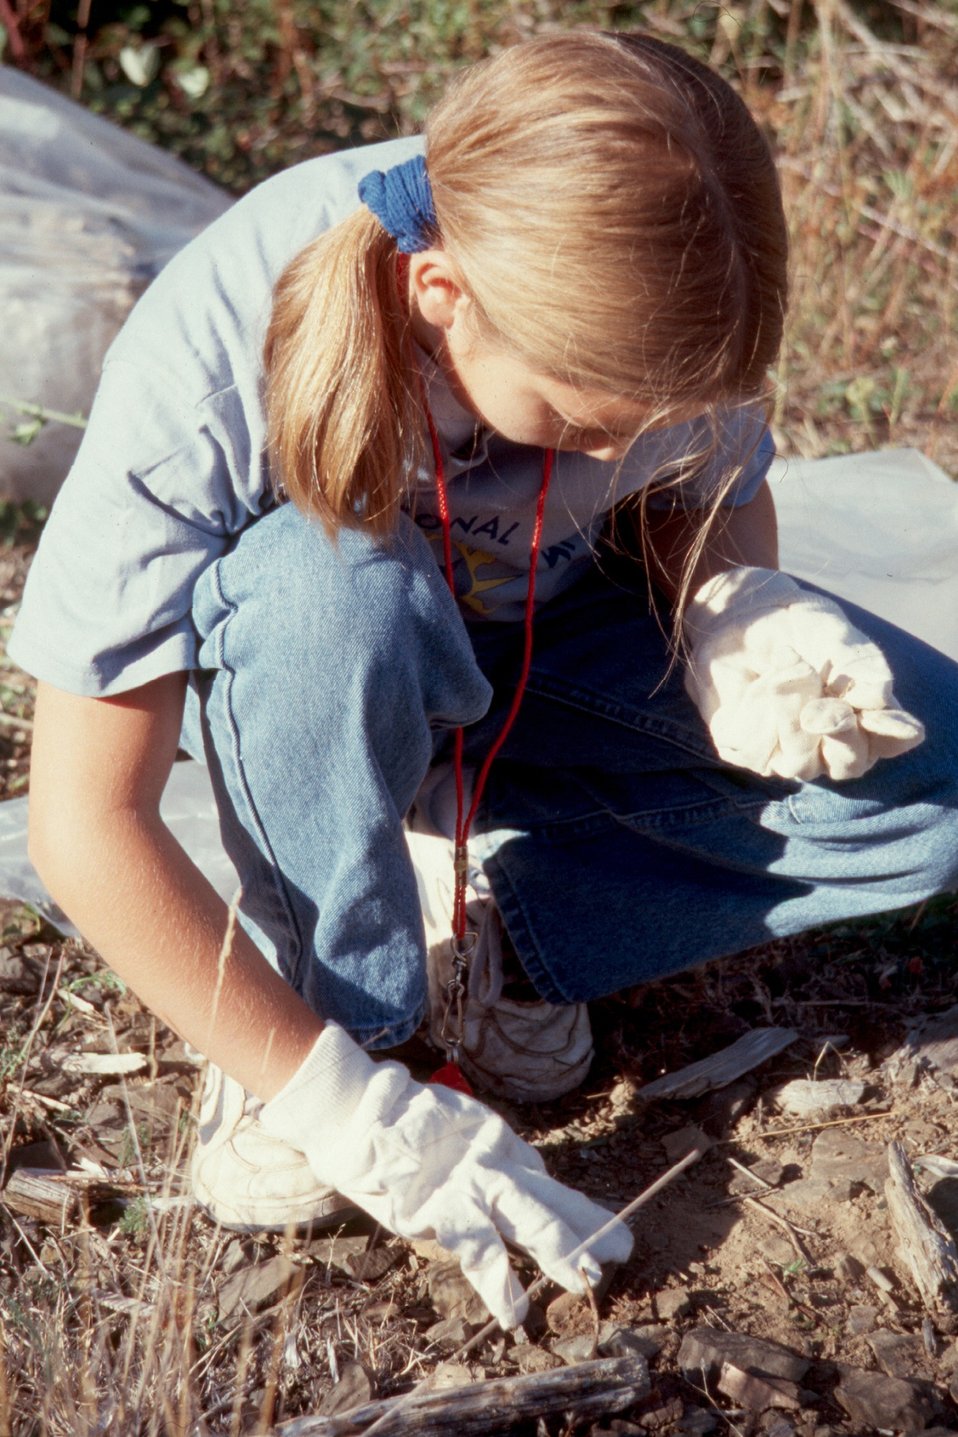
Volunteer Melanie Robertson helps clean up BLM lands